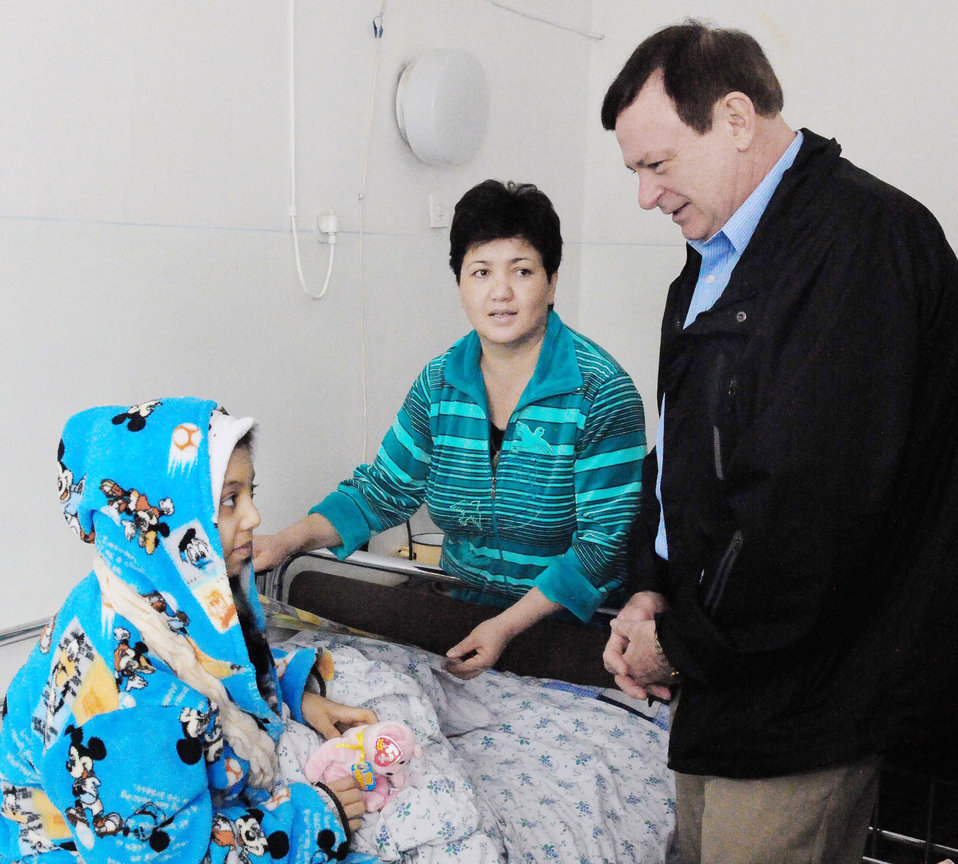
MABOS funds 150th heart surgery

Chaplain (Lt. Col.) James Kinsey, the 376th Air Expeditionary Wing head chaplain at the Transit Center at Manas, Kyrgyzstan, speaks to Firuza Nurahunova as her mother, Polak, looks on. Firuza, a 13-year-old Kyrgyz girl, just had open heart surgery March 21, 2010, at a hospital in Bishkek, Kyrgyzstan, to repair a faulty valve. This is Firuza's third heart surgery, and it was funded by Airmen in the Manas Area Benefits Outreach Society at the transit center. MABOS is a non-profit organization on this installation that has now funded 150 open heart surgeries totaling more than $75,000 through private donations from Airmen and other caring Americans.